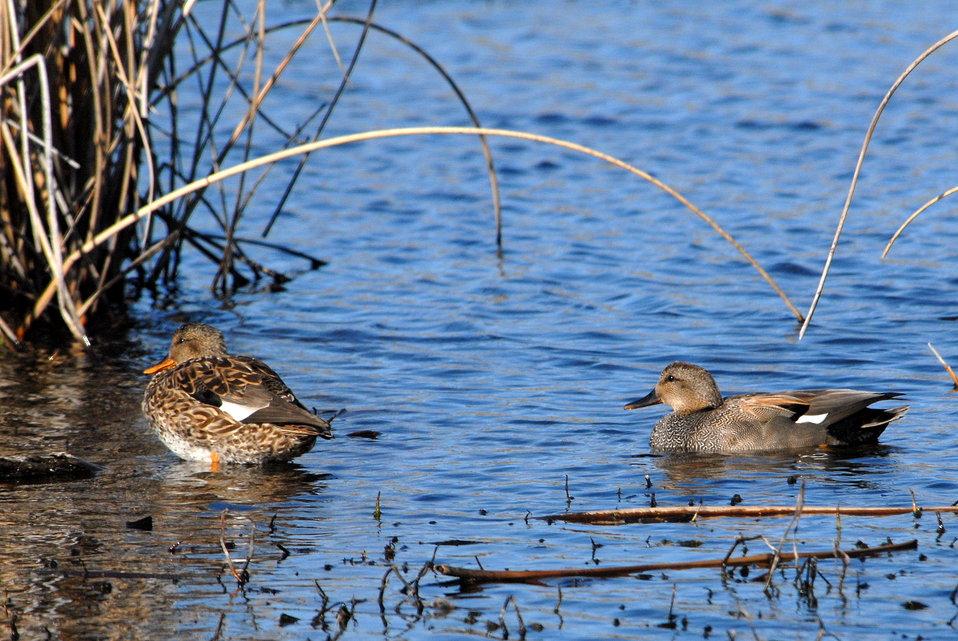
Gadwall